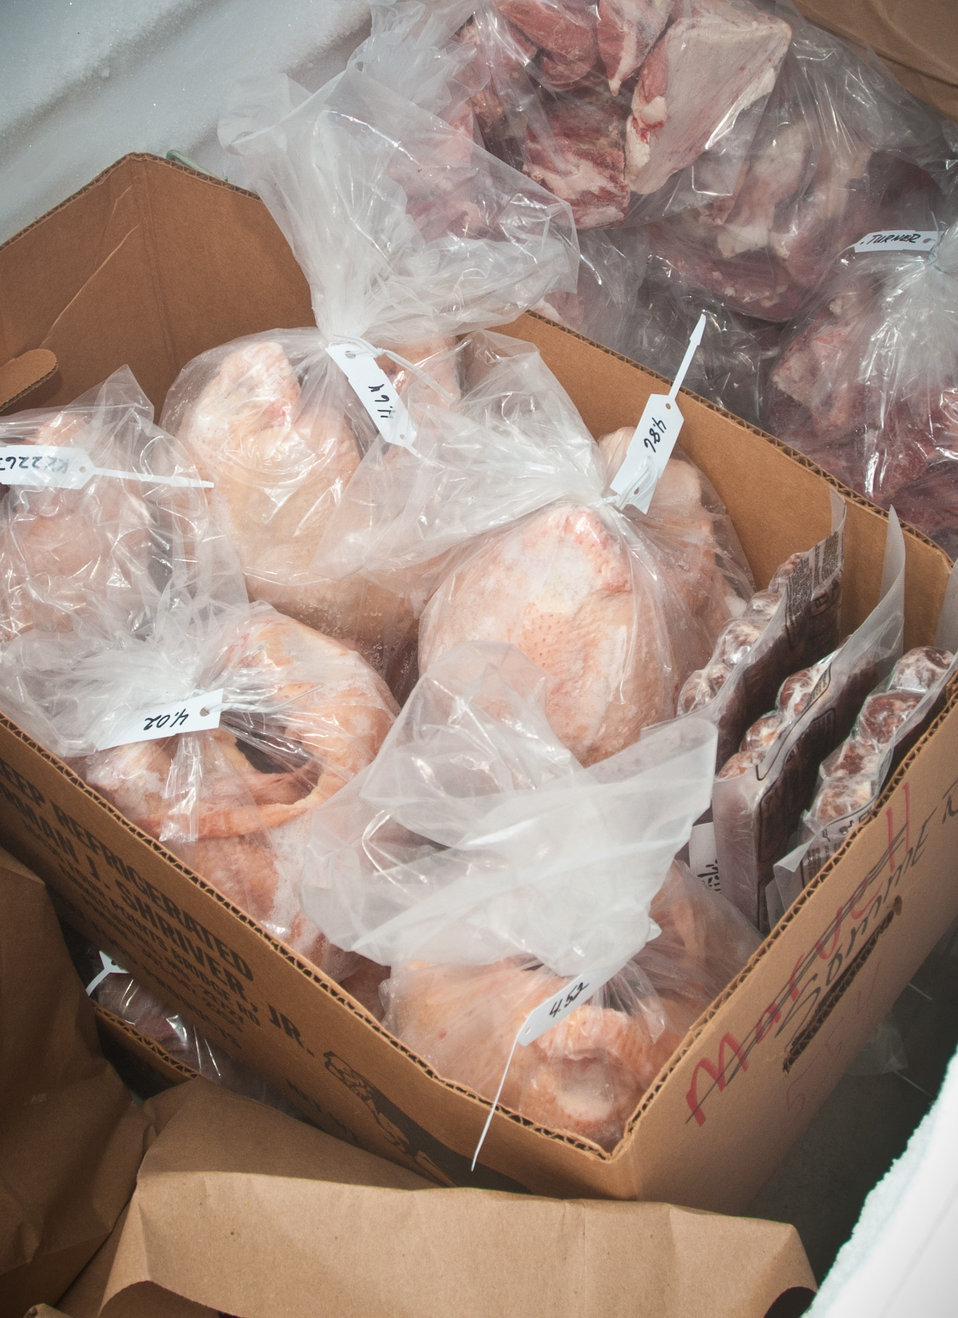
Frozen hens and sausage at Nick’s Organic Farm, in Adamstown, MD, on Friday, July 12, 2013. The farm, owned by Nick Maravell, produces Black Angus beef, chicken, turkey, eggs, hay, soybeans, corn, alfalfa, orchard grass, rye; and other crops. The cattle are100% grass-fed receiving certified organic pasture, certified organic hay (in winter), water and mineral salts mixed with sea kelp. The cattle are not fed hormones, antibiotics or animal products. Poultry feed from grain is ground from organic grain. The poultry also graze on organic pastures. The farm has conducted on-farm research with federal, state and non-profit agencies to refine organic practices.